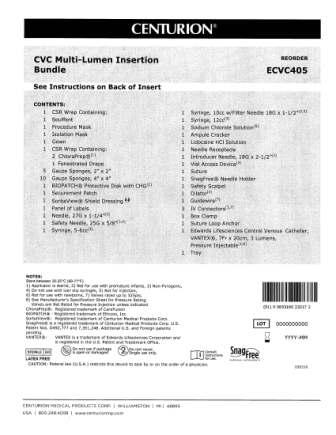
RECALLED - Convenience kits which contain bacteriostatic sodium chloride solution by American Regent

April 1, 2011 - Product Recall - Centurion Medical Products Initiates Voluntary Recall of Customized Convenience Kits (including select Central Venous Catheter, PICC Insertion, and VAD Trays) that contain American Regent’s Bacteriostatic Sodium Chloride Injection, USP, 0.9% 30 mL Multiple Dose Vials.